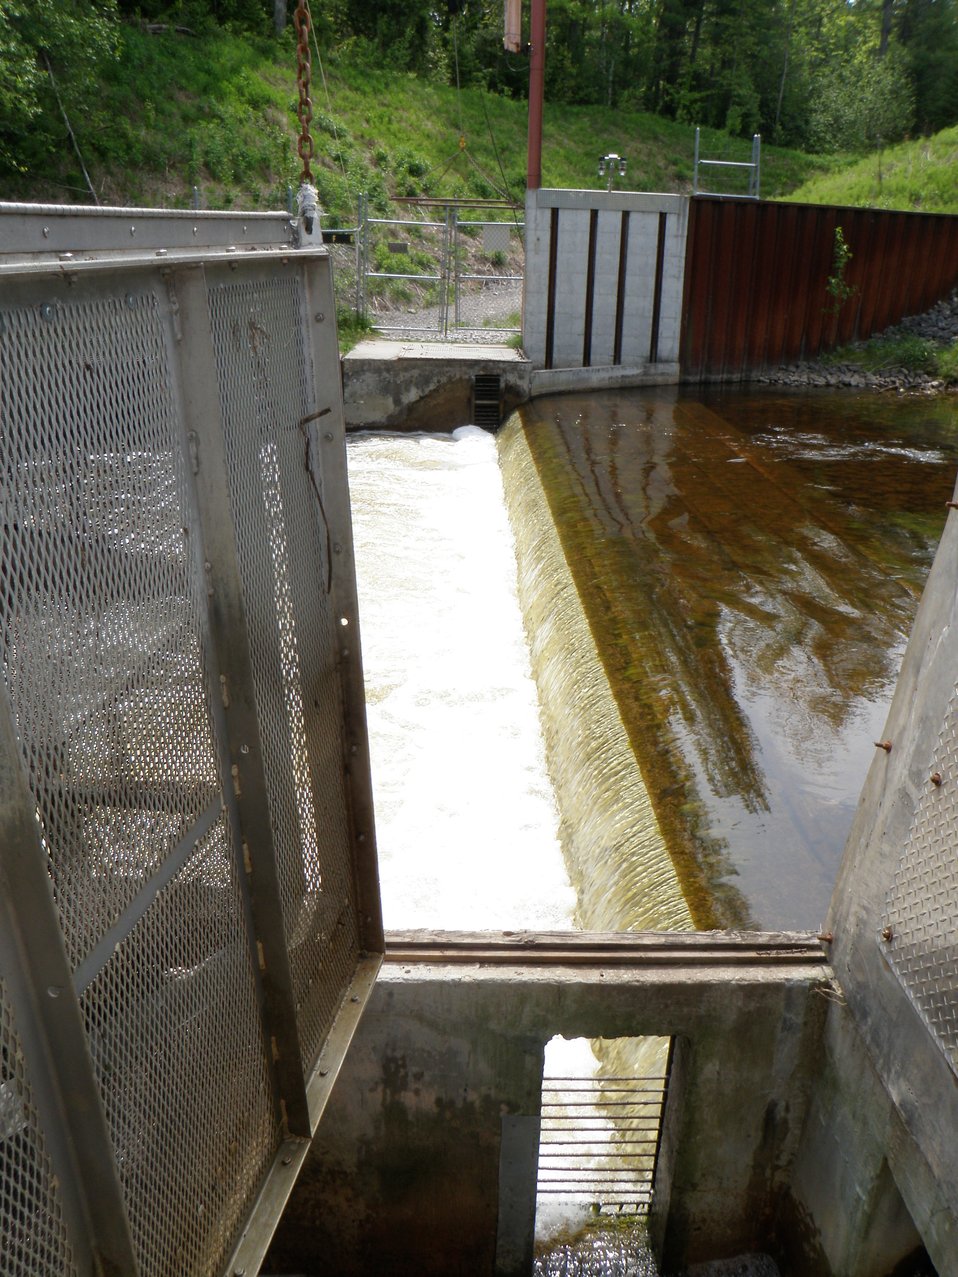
An Electrical Barrier with Integrated Traps on the Ocqueoc River, Michigan.